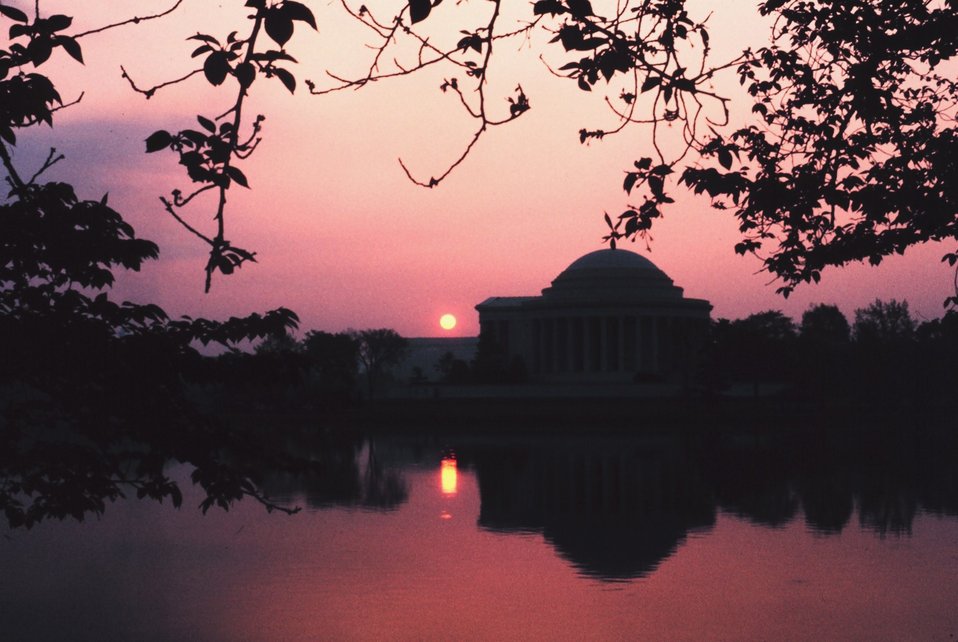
Sunset reflecting off the water at the Jefferson Memorial